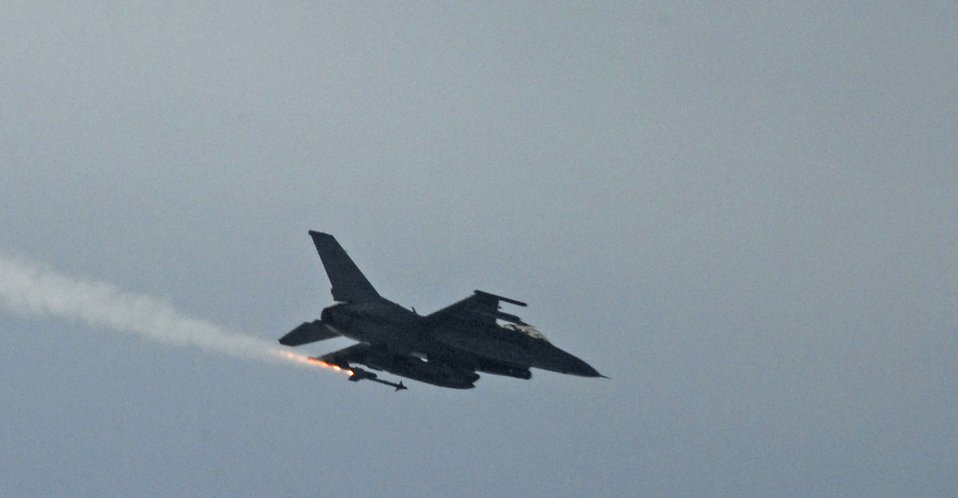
Kunsan pilots improve capability with AIM-9X missile

An F-16 Fighting Falcon pilot shoots an AIM-9 missile Feb. 28 over the South Korean peninsula. The Air Intercept Missile-9X Sidewinder, developed by Raytheon engineers, is a fifth generation AIM-9 missile that is a substantial upgrade to the Sidewinder family featuring an advanced infra-red seeker and a higher off-bore sight capability. The F-16 pilot is assigned to the 35th Fighter Squadron from Kunsan Air Base, South Korea.